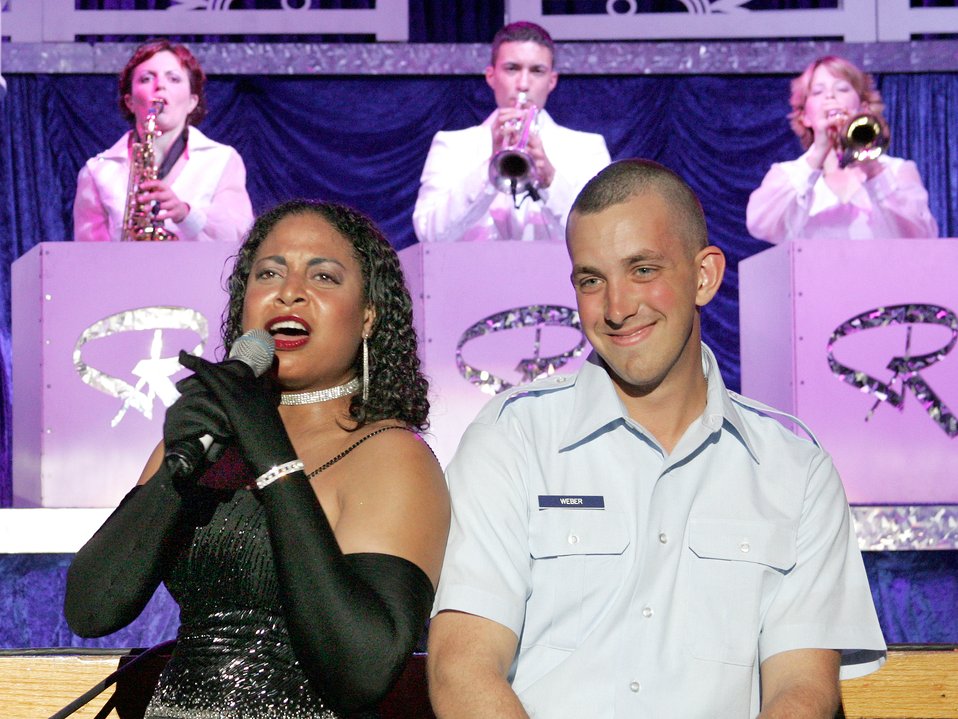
Tops in Blue

Staff Sgt. Terra Mason sings